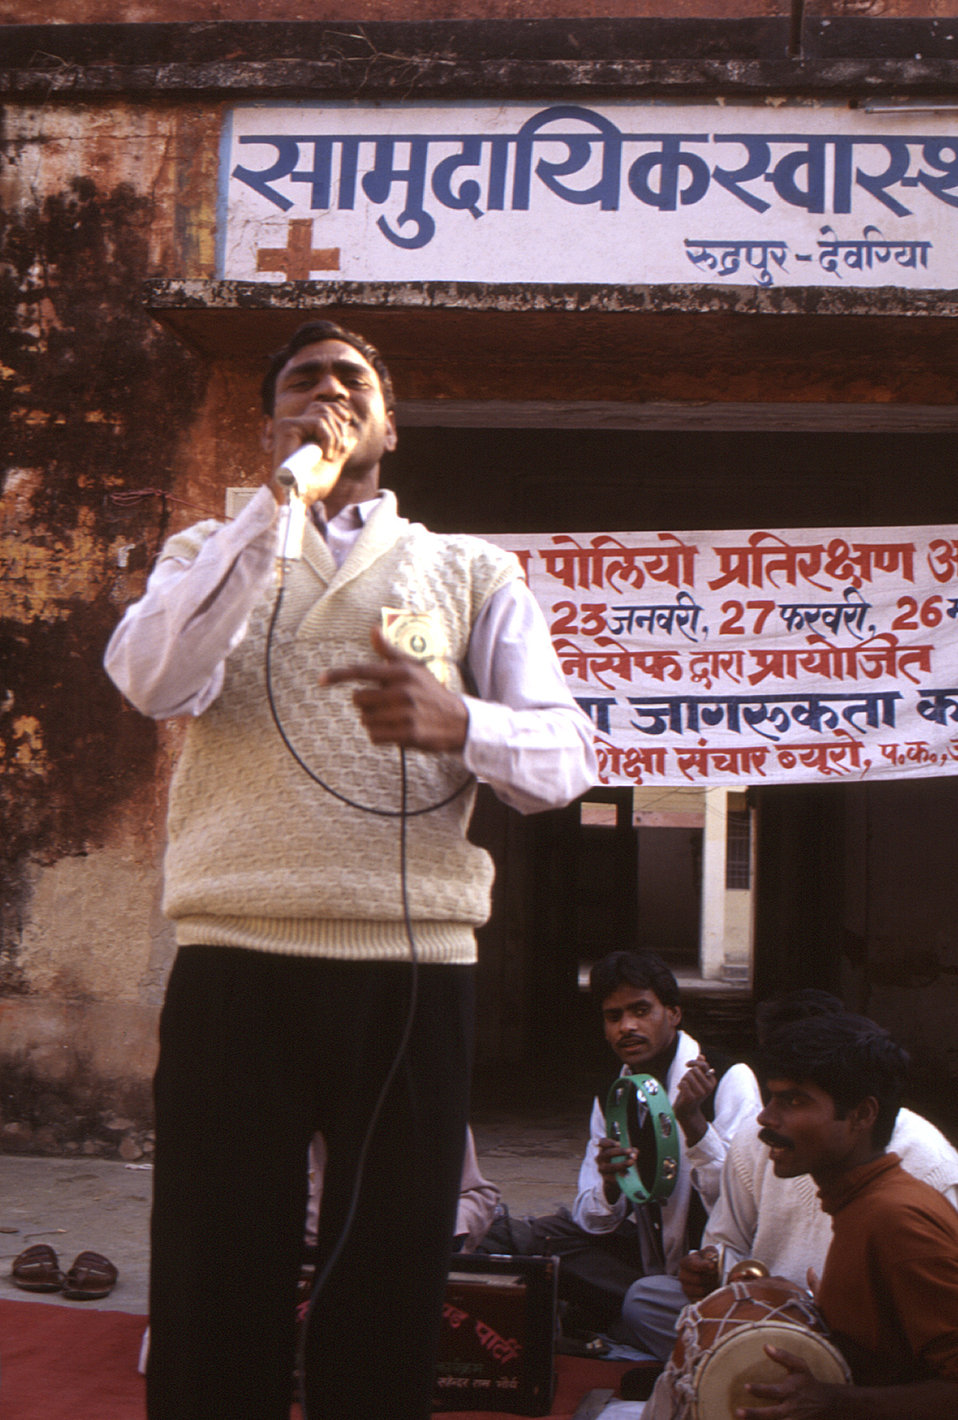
This 2000 photograph depicted a crowd that had gathered to attend a rally promoting the next National Immunization Day (NID) in India. The rally was held in front of the District Health Office and included information about where polio immunization clinics would be held, as well as singers and other entertainment.The image was provided by Chris Zahniser, B.S.N., R.N., M.P.H., a Stop Transmission of Polio (STOP) team member and photographer, who was assigned to the state of Uttar Pradesh in northern India, and spent three months working in the Districts of Gorakhpur and Deoria.